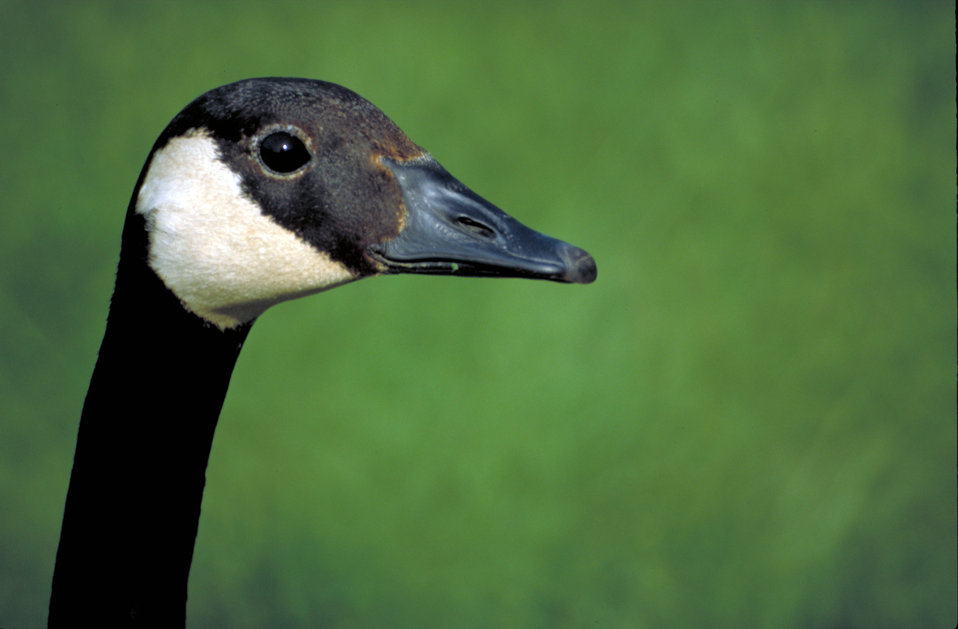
Close-up of a Canada goose

Close-up of the head of a Canada goose.